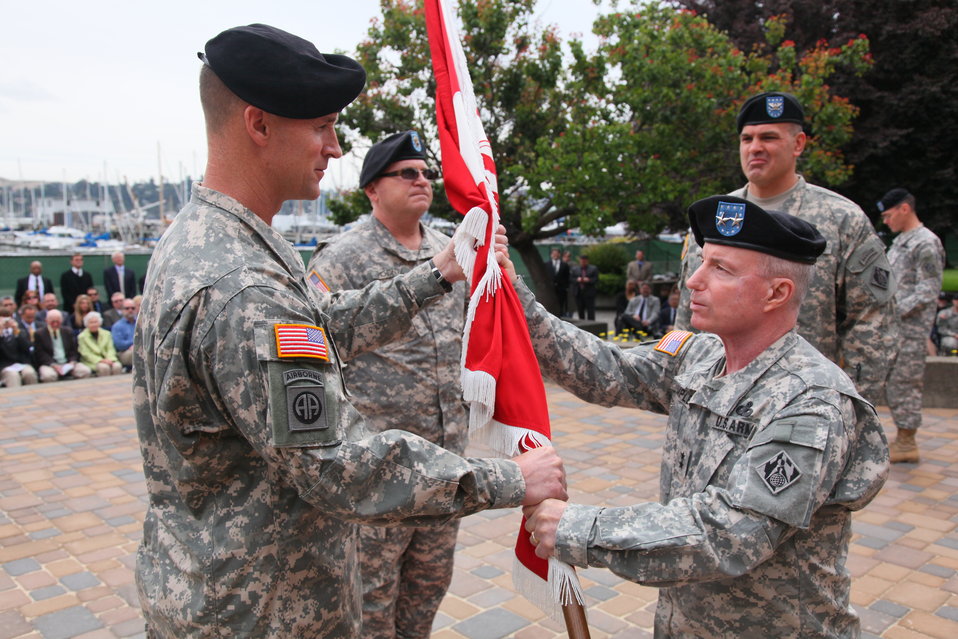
Col. Mike Wehr assumes command of the South Pacific Division

Maj. Gen. Bo Temple (right), deputy commanding general of the U.S. Army Corps of Engineers, passes the guidon to Col. Mike Wehr, incoming commander of the Corps' South Pacific Division, in a change of command ceremony at the Corps' Bay Model visitor center in Sausalito, Calif., June 3, 2011.